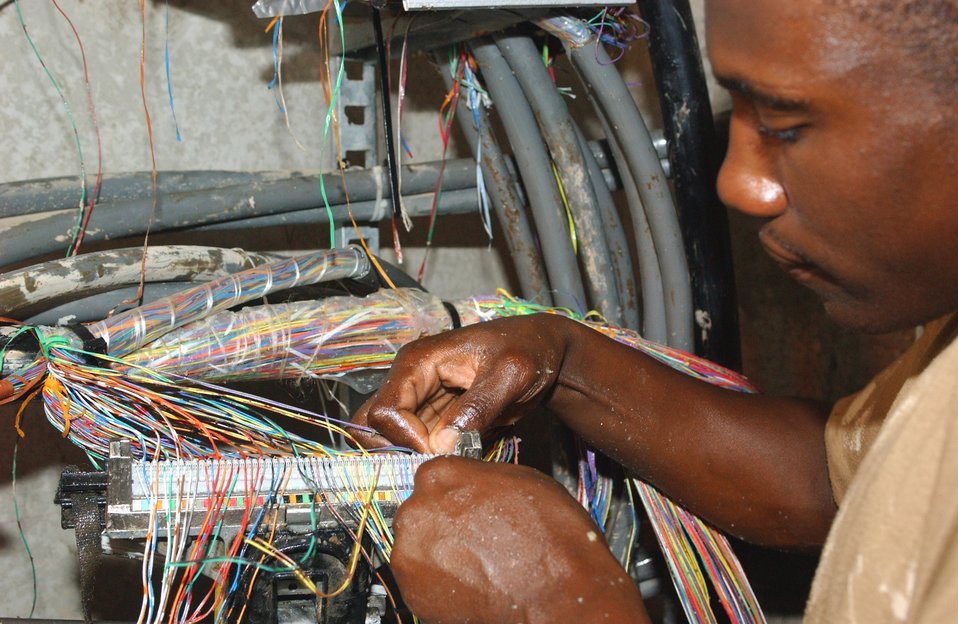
Connecting the world one wire at a time

Senior Airman Jonathan Williams places copper cables on a splice machine at Ali Base, Iraq, on Friday, May 5, 2006. Airman Williams is deployed to the 407th Expeditionary Communications Squadron from F.E. Warren Air Force Base, Wyo.